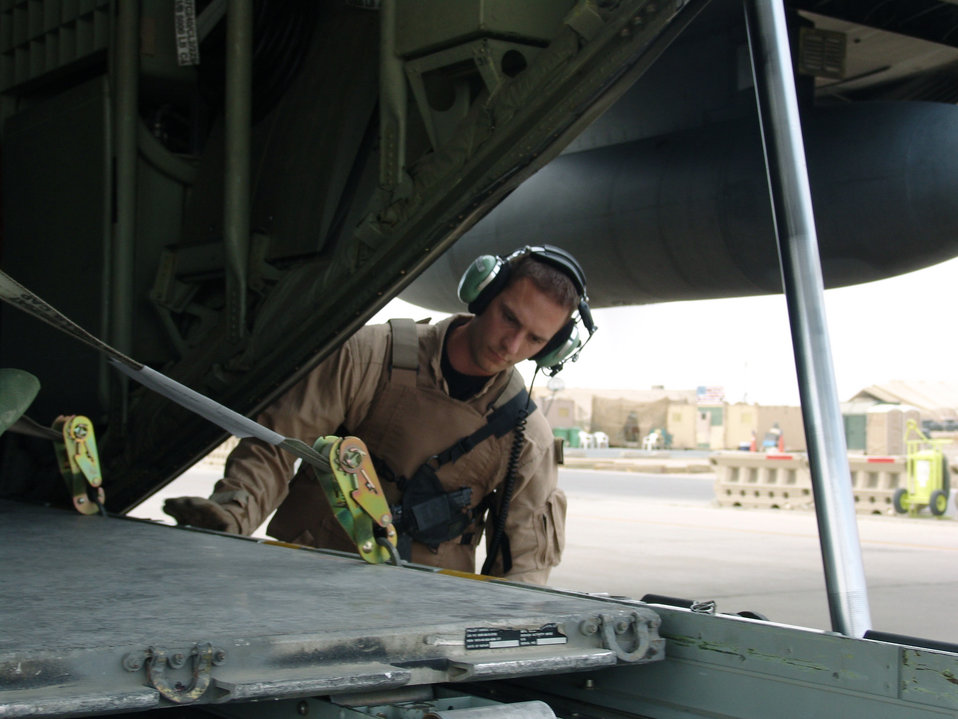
Into Iraq

IRAQ -- Tech. Sgt. Scott Jones watches as a pallet is loaded aboard a C-130 Hercules in Iraq on Oct. 25. He is a loadmaster assigned to the 386th Airlift Squadron at a forward-deployed location. Sergeant Jones is deployed supporting Operation Iraqi Freedom from the 440th Airlift Wing at the General Mitchell Air Reserve Station, Wis.